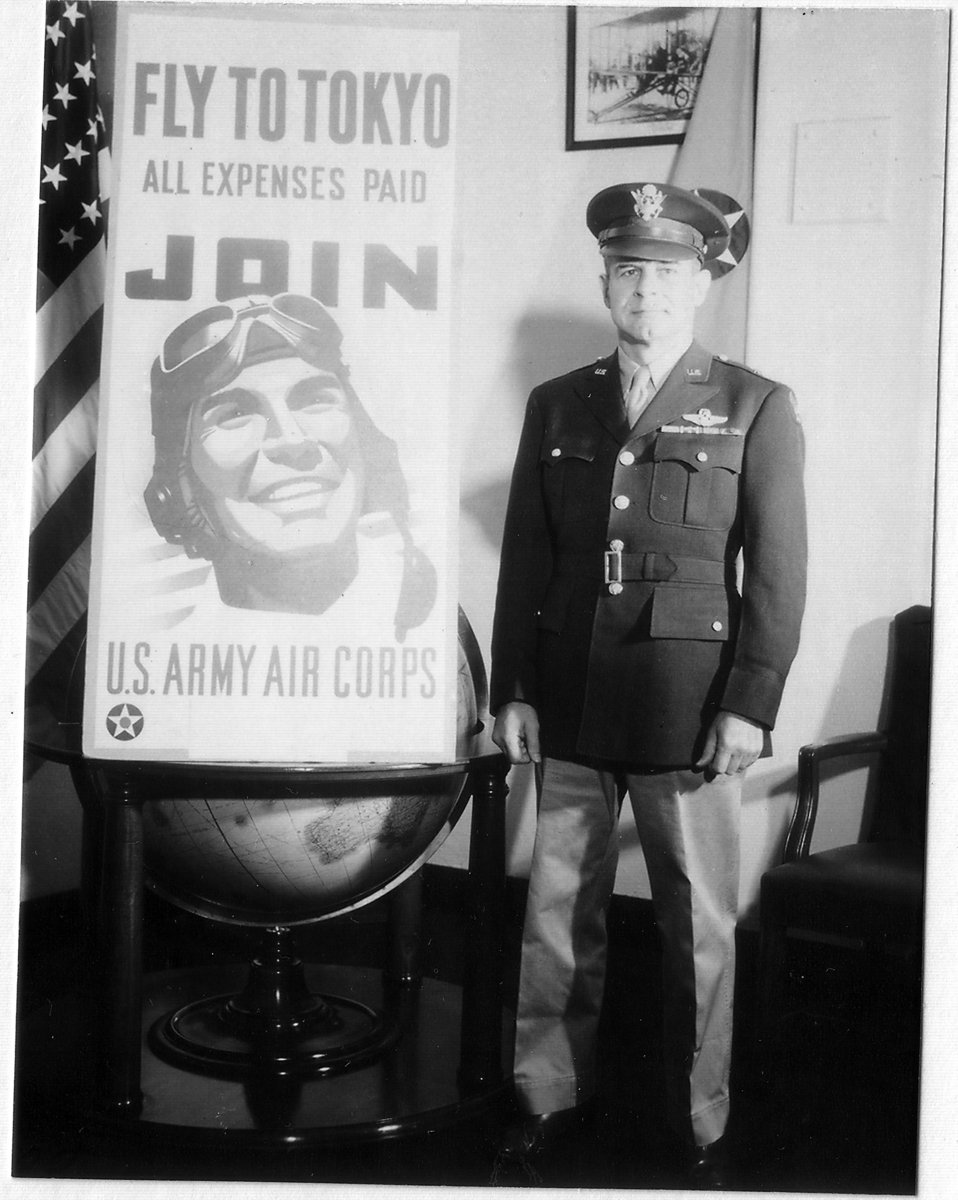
1942 War-time Recruiting Poster

Brig. Gen. James H. Doolittle stands near a war-time recruiting poster alluding to his April 1942 bombing raid on Japan. These types of posters were part of everyday life on the homefront during World War II.